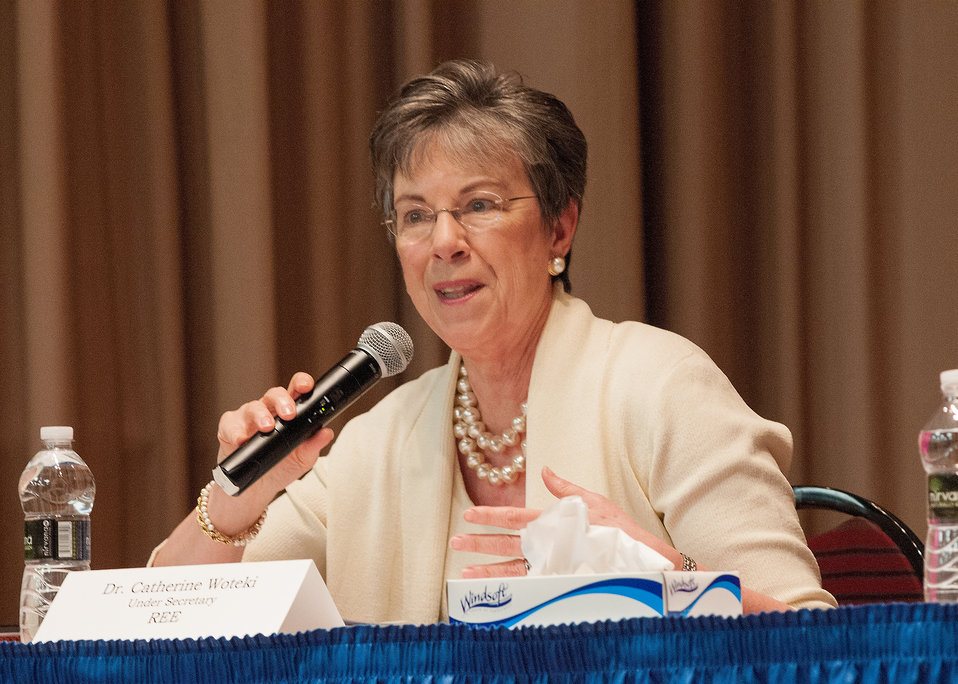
Agriculture Under Secretary, Research, Education and Economics (REE) Dr. Katherine Wotecki was one of four panel members at the USDA Office of the Chief Information Officer’s (OCIO) National Women’s History Month celebration at the USDA Jefferson Auditorium in Washington, D.C. on Thursday, Mar. 14, 2013. The theme of this year’s celebration is, “Recognizing American Women’s Outstanding Contributions to the Field of Science, Technology, Engineering and Mathematics,” commonly referred to as STEM. Each panel member answered four questions: Who in History was a good role model? What were your biggest hurdles being in Science, Technology, Engineering and Mathematics (STEM)? And for women today what is your single piece of advice? All panel members mentioned setting professional and personal goals, strength of family and loving their career choices.